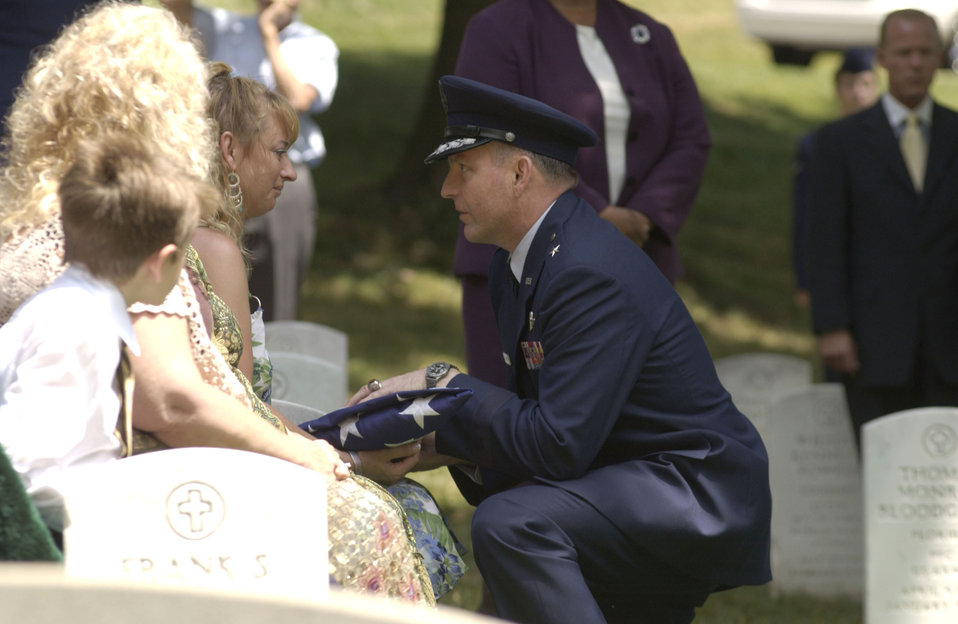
Father's Day bittersweet for one Airman's family

Brig. Gen. Paul Schafer presents the U.S. flag to Angela Cooke at the funeral for her father, Staff Sgt. Calvin Cooke Jr., at Arlington National Cemetery in Arlington, Va., on Tuesday, June 20. Sergeant Cooke, a C-130 Hercules loadmaster, died in April 1972 when his aircraft crashed in South Vietnam after being hit by ground fire. His remains were identified last month by experts at the Joint Prisoner of War/Missing in Action Accounting Command headquarters. General Schafer is director of the special programs office for the under secretary of defense for acquisitions, technology and logistics.